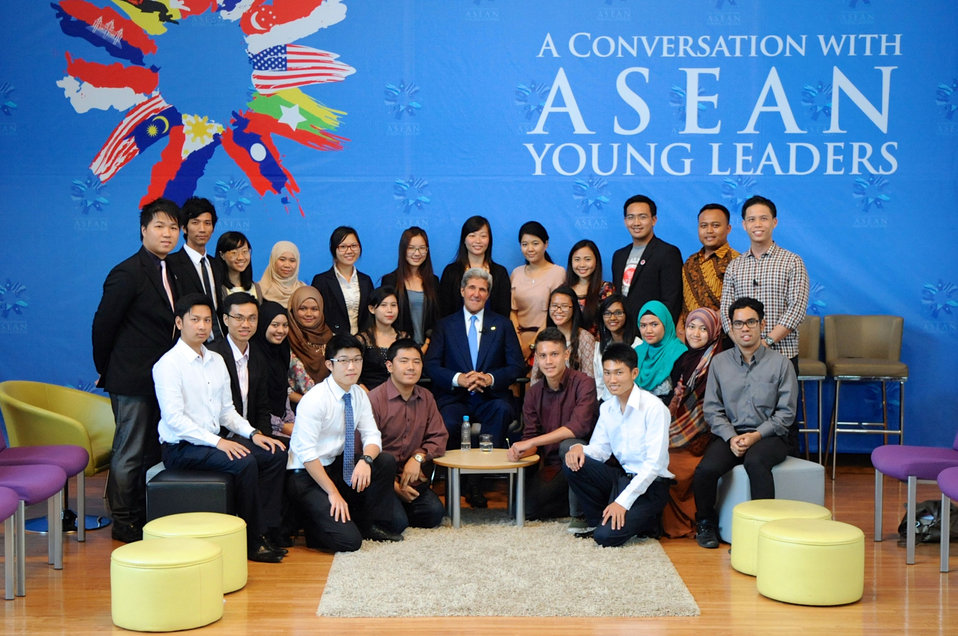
Secretary Kerry, Young ASEAN Leaders Pose After Meeting

U.S. Secretary of State John Kerry and students who participated in a 'ASEAN Young Leaders' conversation in Bandar Seri Begawan, Brunei, pose for a group photo on October 9, 2013.